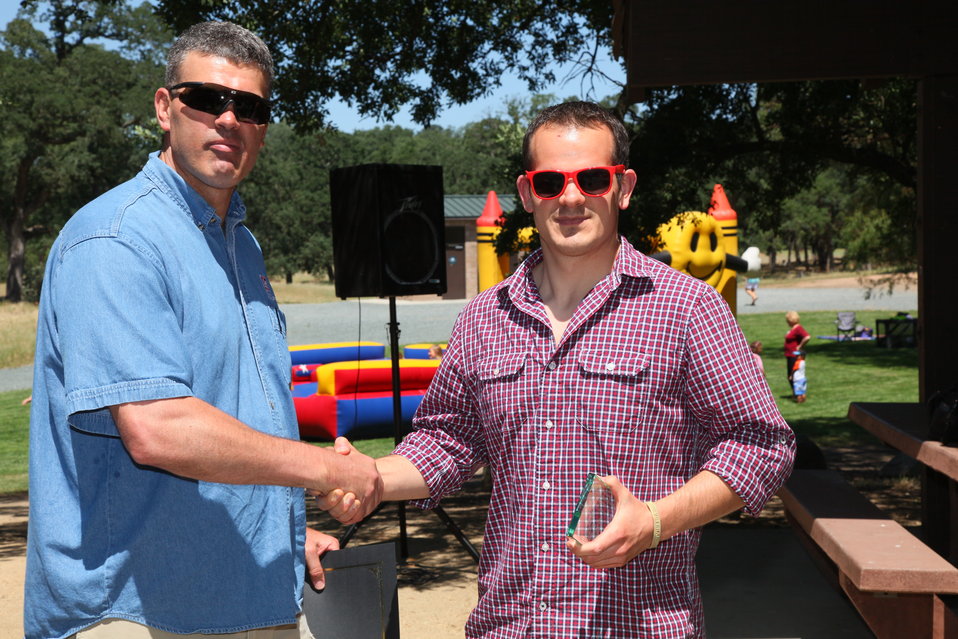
2011 Annual Picnic